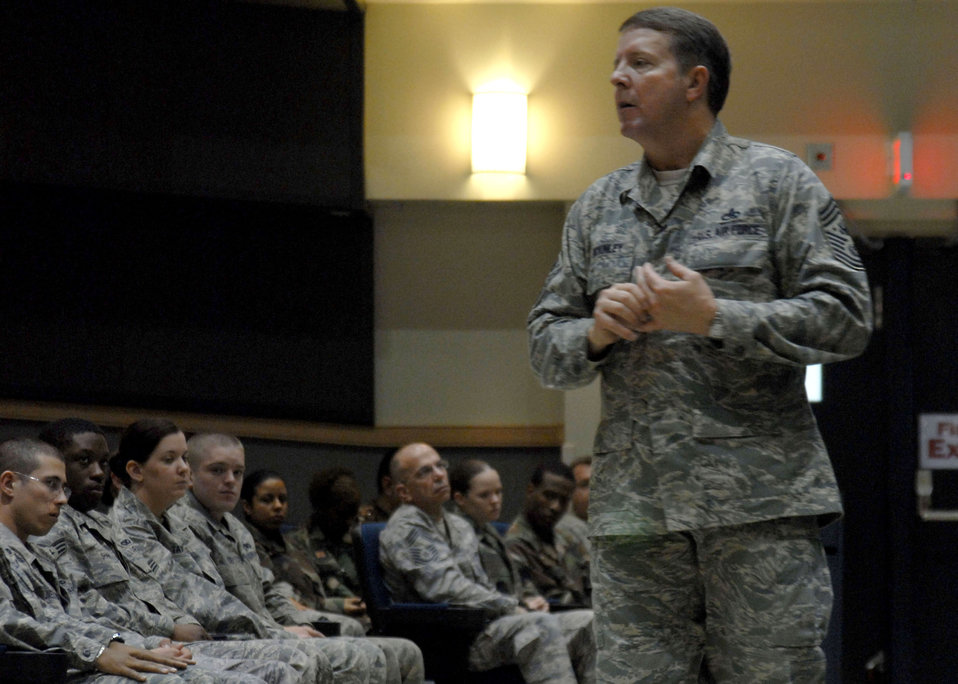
Chief master sergeant of the Air Force visits Kunsan Airmen

Chief Master Sgt. of the Air Force Rodney J. McKinley speaks to Airmen from the 8th Fighter Wing during an Enlisted Call during his March 24 visit to Kunsan Air Base, South Korea.